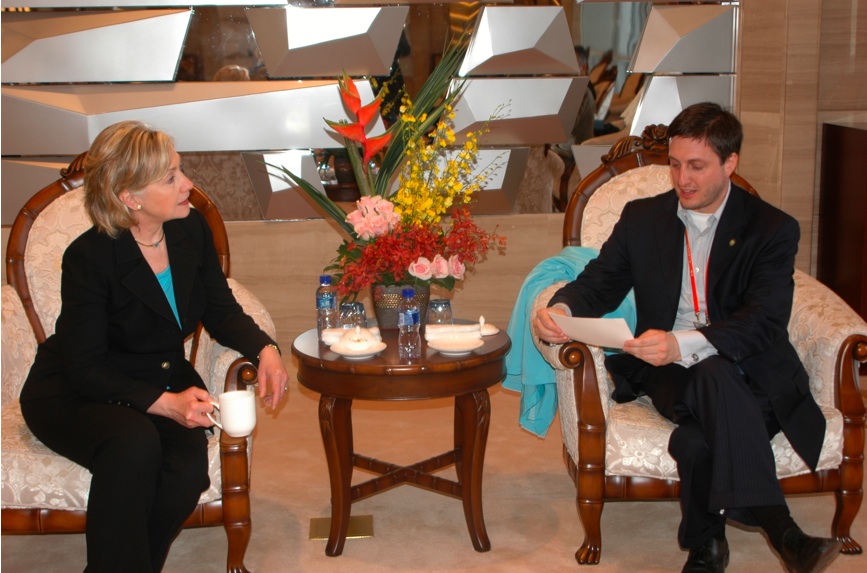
Secretary Clinton Speaks With Senior Advisor Reines

U.S. Secretary of State Hillary Rodham Clinton speaks with her senior adviser, Philippe Reines, in Shanghai, China, May 22, 2010.